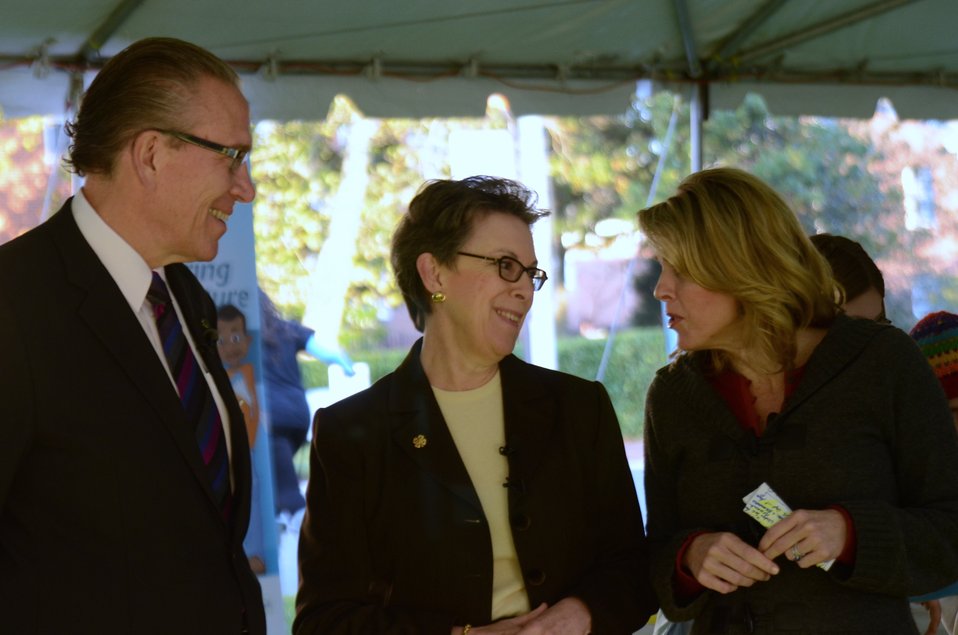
Left to right, Donald T. Floyd, Jr., President and CEO, National 4-H Council and Dr. Catherine Woteki, Under Secretary for Research, Education and Economics are interviewed by Fox WTTG reporter Holly Morris on the 4H campus in Chevy Chase, MD, on Wednesday, October 5, 2011.